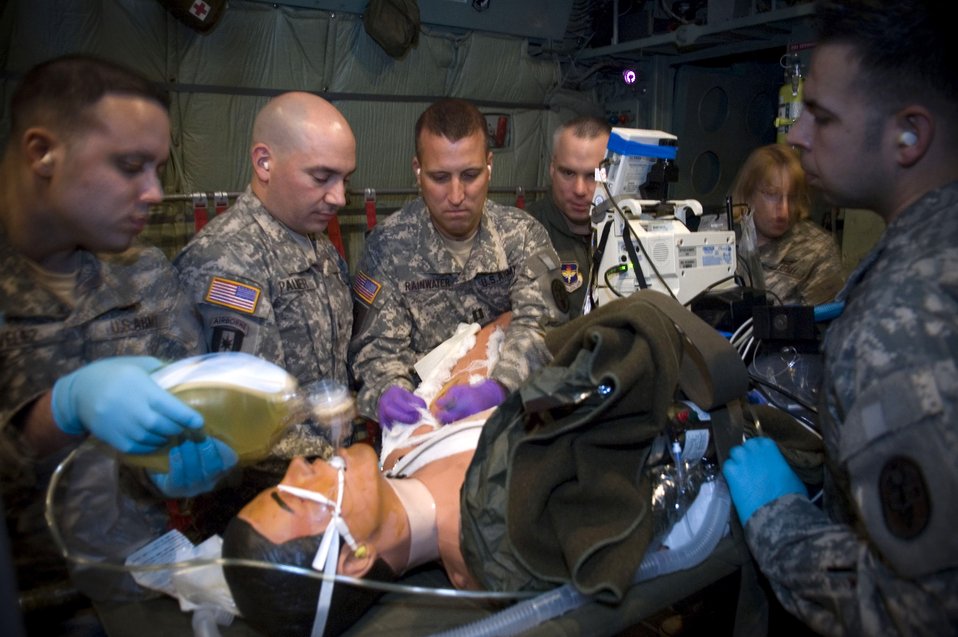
Air Force provides Army burn flight team with training

Special medical augmentation response team members based at Brooke Army Medical Center at Fort Sam Houston, Texas, care for a simulated burn patient inside a C-130 Hercules aircraft simulator at Brooks City-Base, Texas. It's part of critical care air transport team training conducted by the School of Aerospace Medicine at Brooks City-Base.